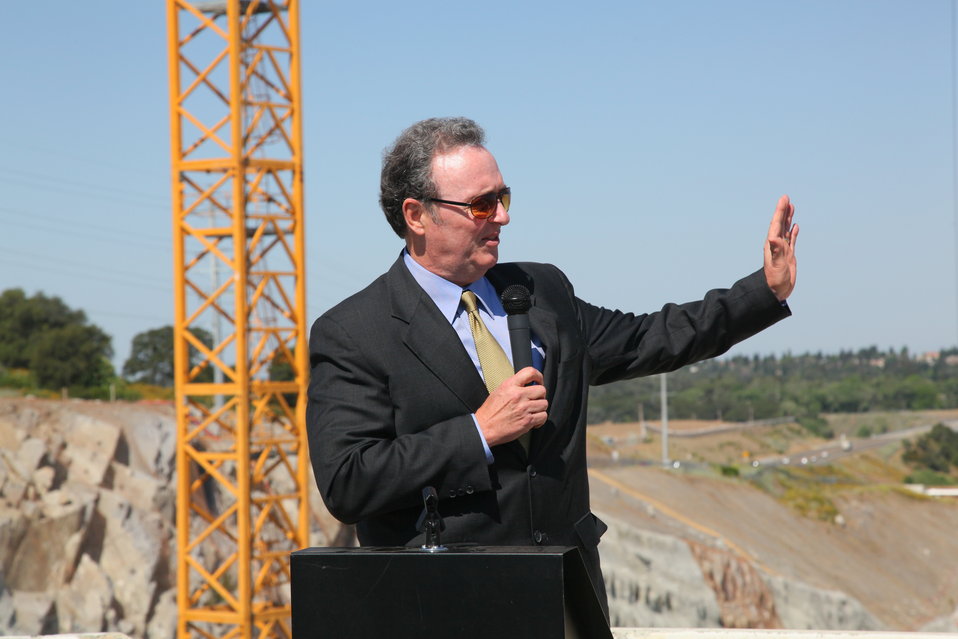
First concrete ceremony for Folsom Dam spillway

U.S. Rep. Dan Lungren addresses the crowd at a ceremony commemorating the first concrete placement for the auxiliary spillway control structure at Folsom Dam in Folsom, Calif., May 24, 2012. The U.S. Army Corps of Engineers, together with the U.S. Bureau of Reclamation and state and local partners, is building the spillway to reduce flood risk throughout the Sacramento region.